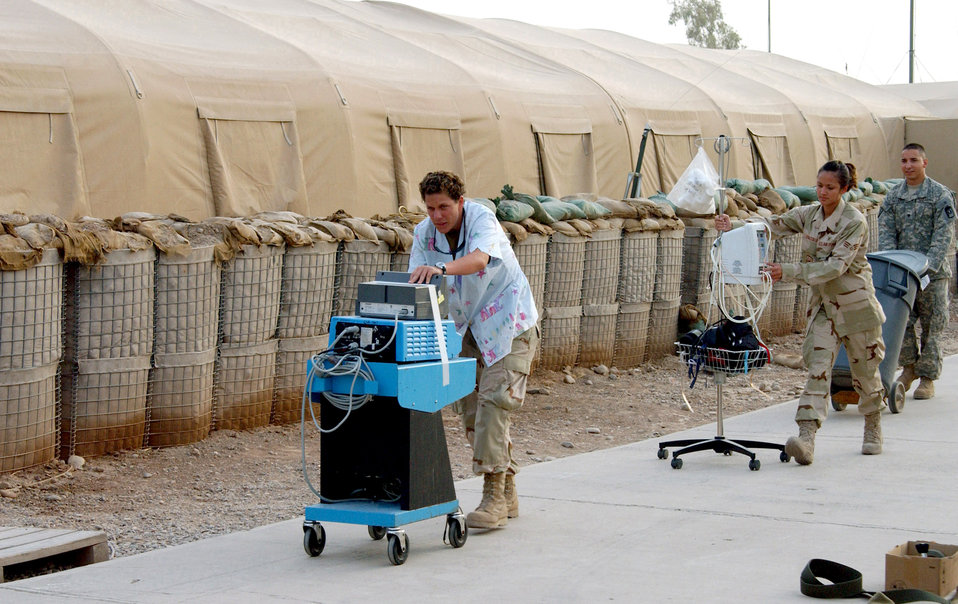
Balad's medics move into new facility

Staff Sgt. Tanja Green, Senior Airman Jacklynn Levasseur and Army Spc. Ivan Nazario move equipment from the 332nd Expeditionary Medical Group's Air Force Theater Hospital's tent facility to its newly upgraded, pre-engineered facility at Balad Air Base, Iraq, Aug. 3. Sergeant Green is a surgical technician, and Airman Levasseur and Specialist Nazario are radiology technicians assigned to the 332nd EMDG.